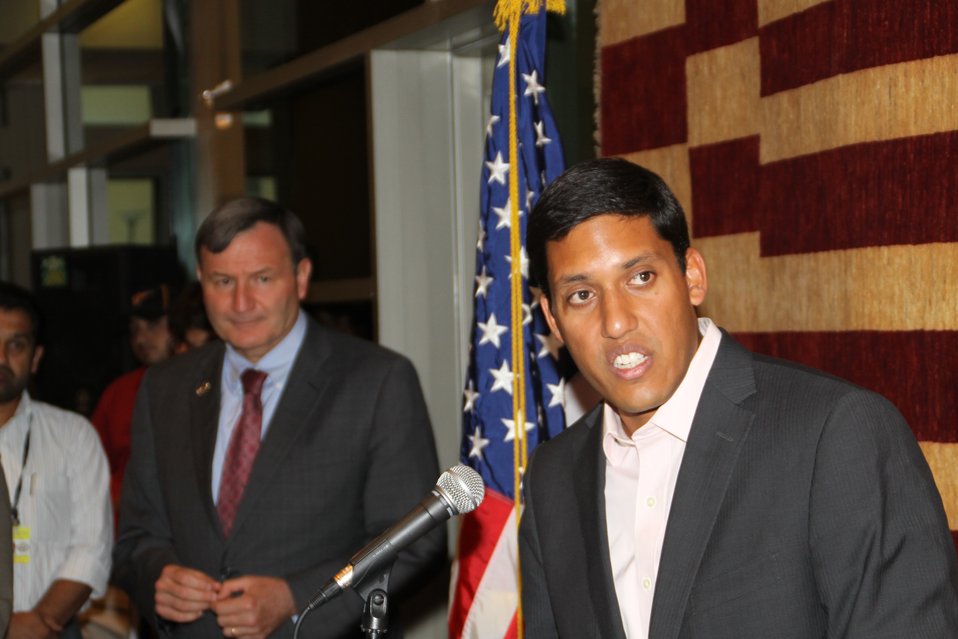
US Embassy Town Hall July 21, 2010